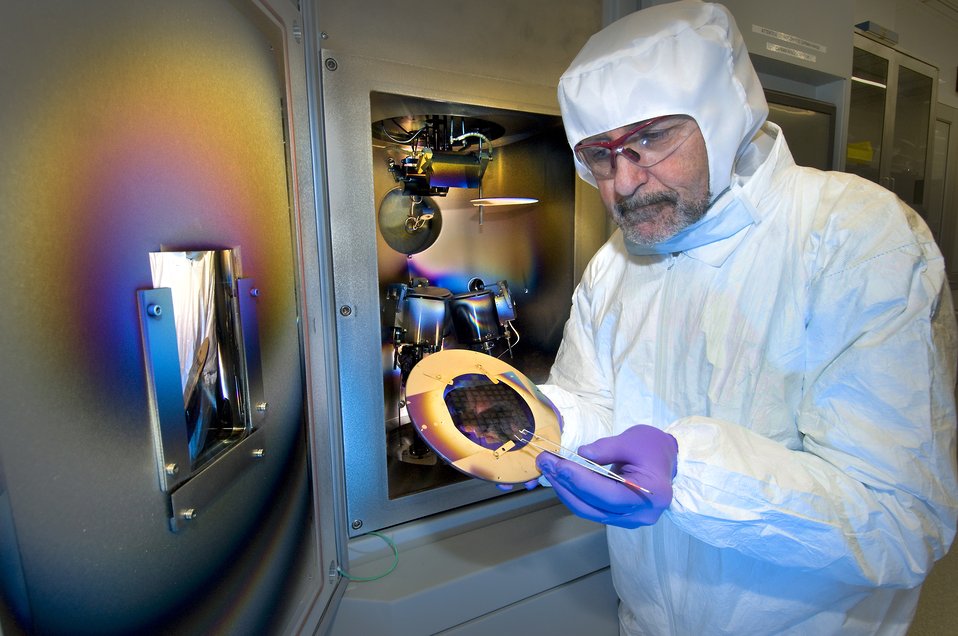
Shown is the Thin-Film Deposition at the Nanofabrication Facility at Brookhaven National Laboratory.
The Nanofabrication Facility at Brookhaven's Center for Functional Nanomaterials provides 5,000 square feet of Class 1000 cleanroom space dedicated to state-of-the-art processing of thin-film materials and devices. Core laboratory capabilities include high-resolution patterning by electron-beam lithography, nanoimprint, and photolithography.